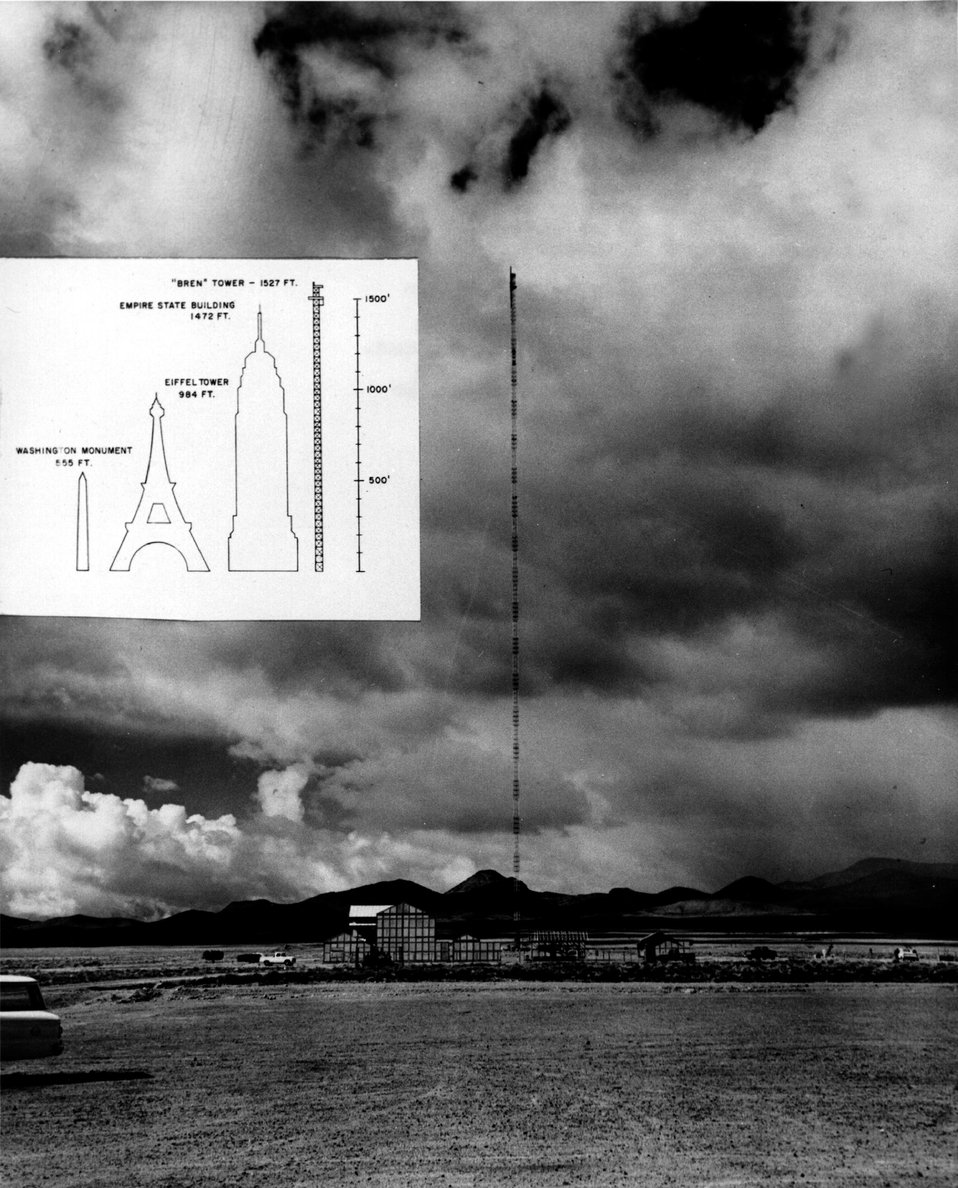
In order to properly relate the medical data obtained among survivors of Hiroshima and Nagasaki atomic detonations to the actual radiation doses received, the AEC has been conducting a series of experiments at its Nevada Test Site. c. 1963